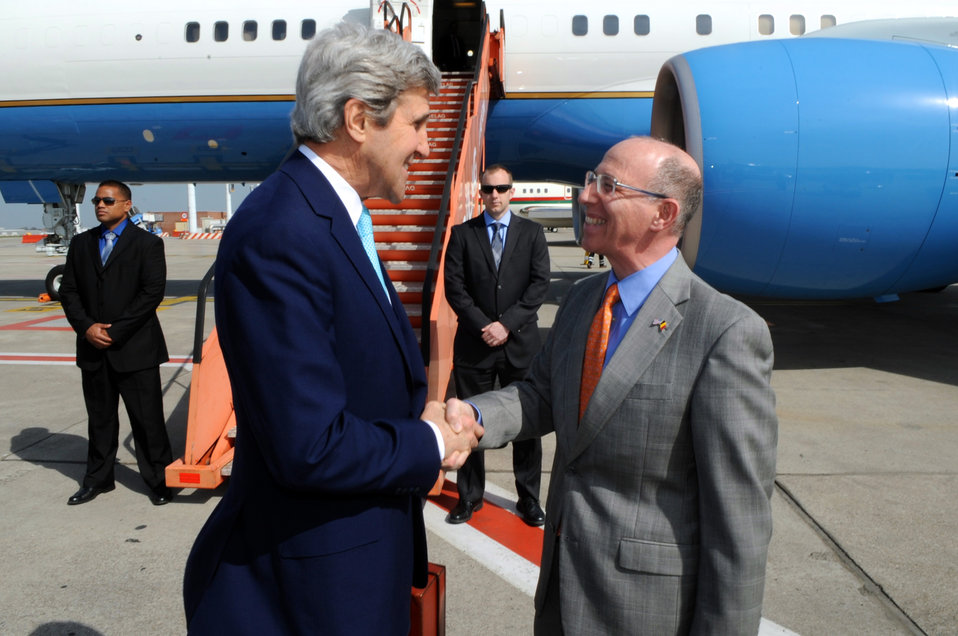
Charge d'Affaires Storella Welcomes Secretary Kerry to Brussels for NATO Ministerial

Charge d' Affaires Mark Storella of the U.S. Embassy in Brussels, Belgium, welcomes U.S. Secretary of State John Kerry as he arrives for ministerial meetings at NATO Headquarters in Belgium on April 1, 2014.